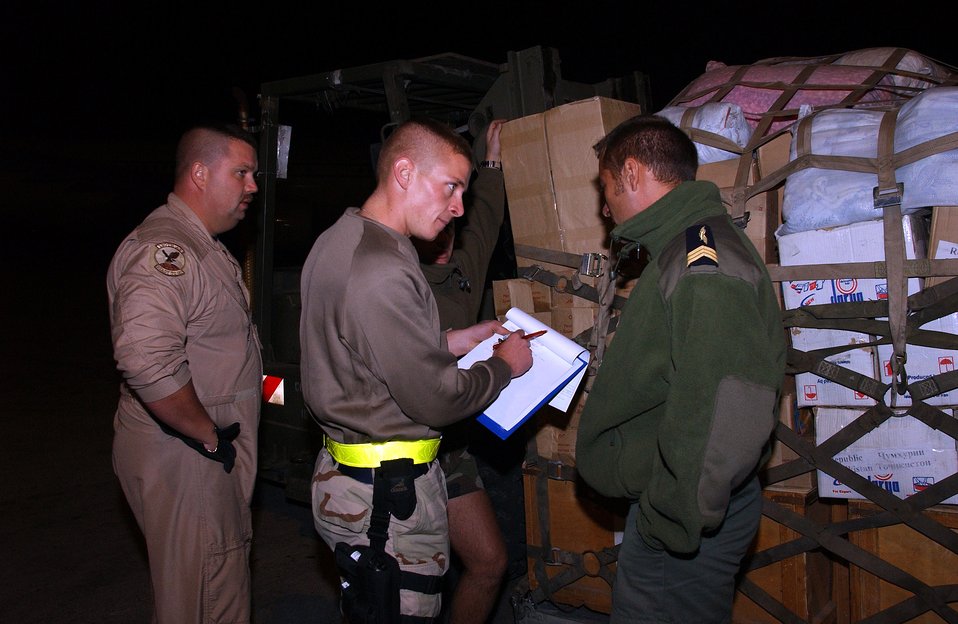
Pakistan relief

DUSHANBE, Tajikistan (AFPN) -- Staff Sgt. Todd Lowe (left) and Staff Sgt. Christopher Yates (center) verify payload information with a Tajik Soldier here. On Oct. 23, their C-130 Hercules, from the West Virginia Air National Guard's 130th Airlift Squadron, delivered more than 22,000 pounds of humanitarian goods to Pakistan. The people of Tajikistan donated the relief supplies. The Air Force is delivering disaster relief supplies and services as part of a multinational effort to provide aid and support to Pakistan and parts of India and Kashmir following the Oct. 8 earthquake.